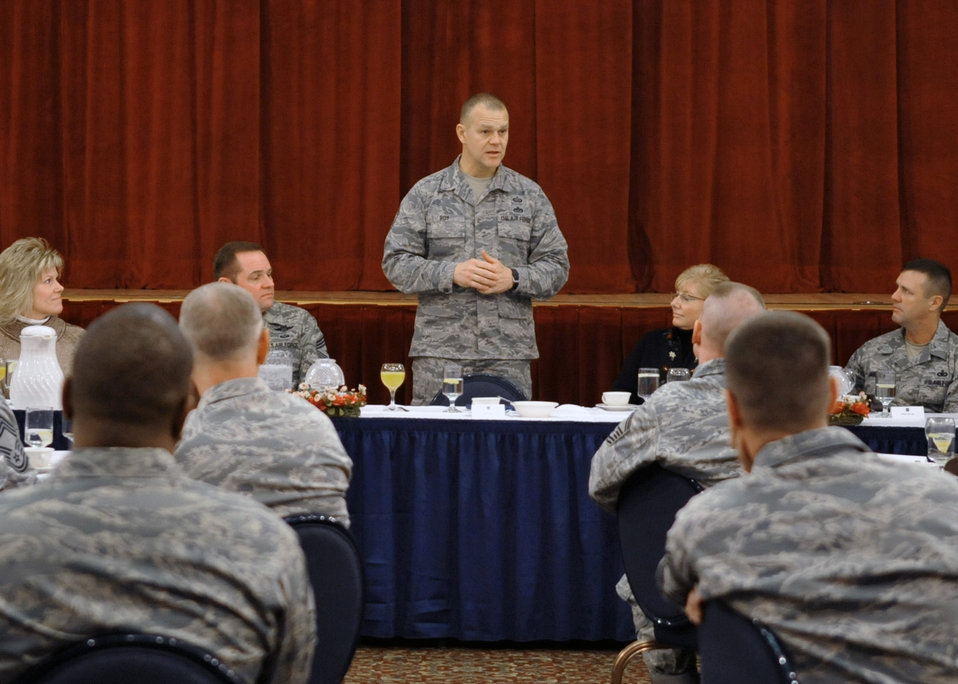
CMSAF visits Osan Air Base

Chief Master Sgt. of the Air Force James Roy addresses chiefs' group members and spouses, Dec. 31, 2010, at Osan Air Base, South Korea. Chief Roy discussed issues regarding enlisted perspective and key issues across the Air Force.